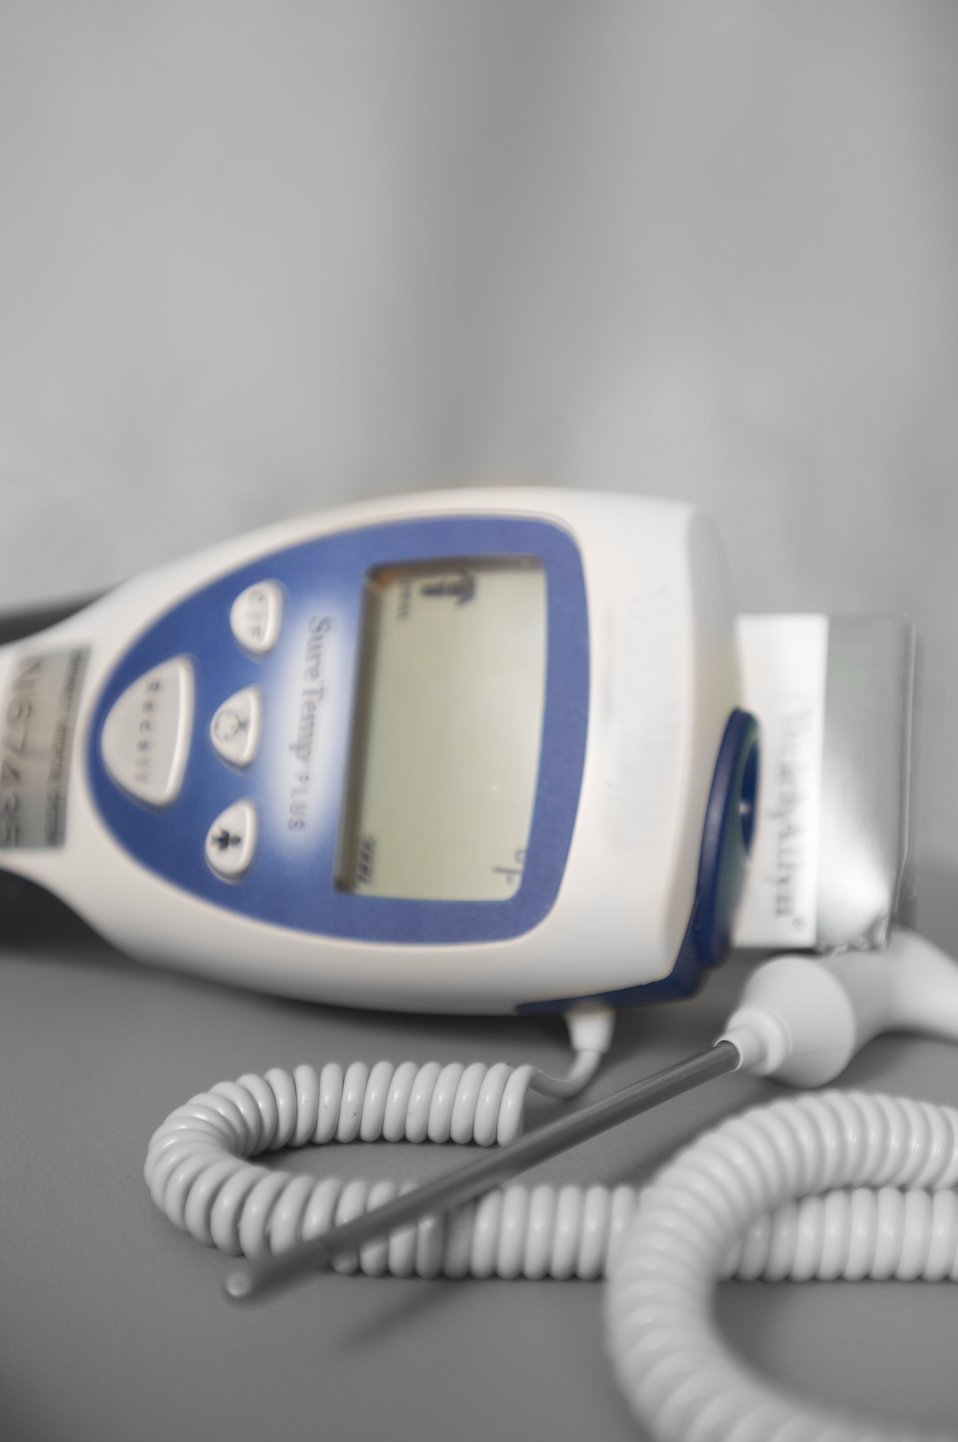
This is a high-tech electronic thermometer, which reveals its reading on a hand-held liquid crystal digital display. The metallic probe may be placed under the tongue, which will give you an oral temperature, in the armpit, revealing an axillary temperature, or in the rectum, revealing the rectal temperature.